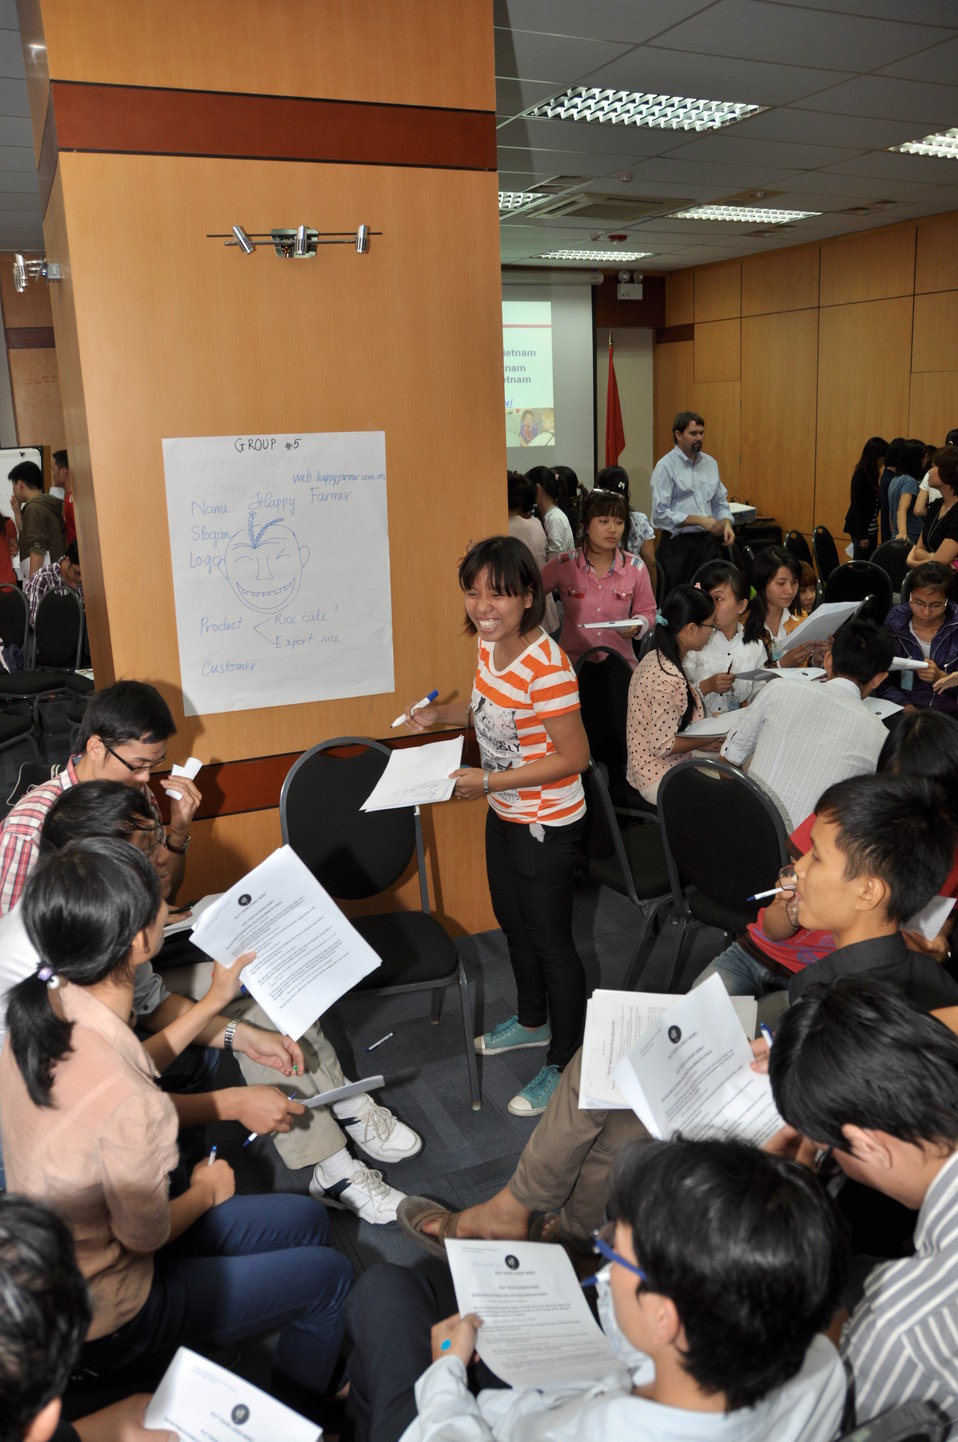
Vietnamese university students join the Business Plan Mashup exercise

Photo: @USAIDVietnam, November 16, 2012